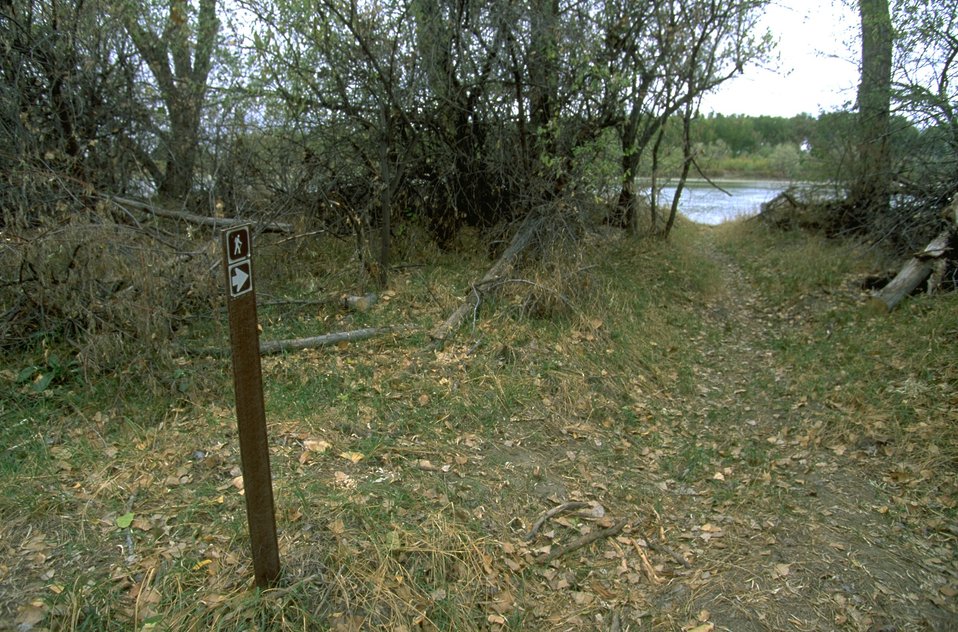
Hiking Route sign at Howrey Island Recreation Area